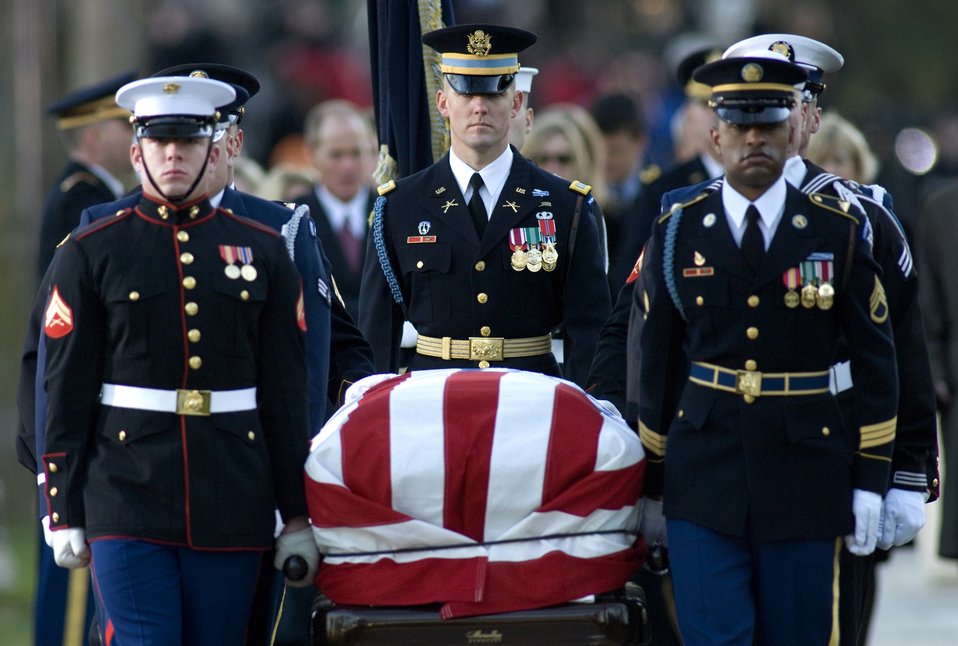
Honor Guard gives President Ford final honors

Armed Forces Honor Guard body bearers carry President Gerald R. Ford for his internment at the Gerald R. Ford Presidential Library and Museum Jan. 3 in Grand Rapids, Mich.